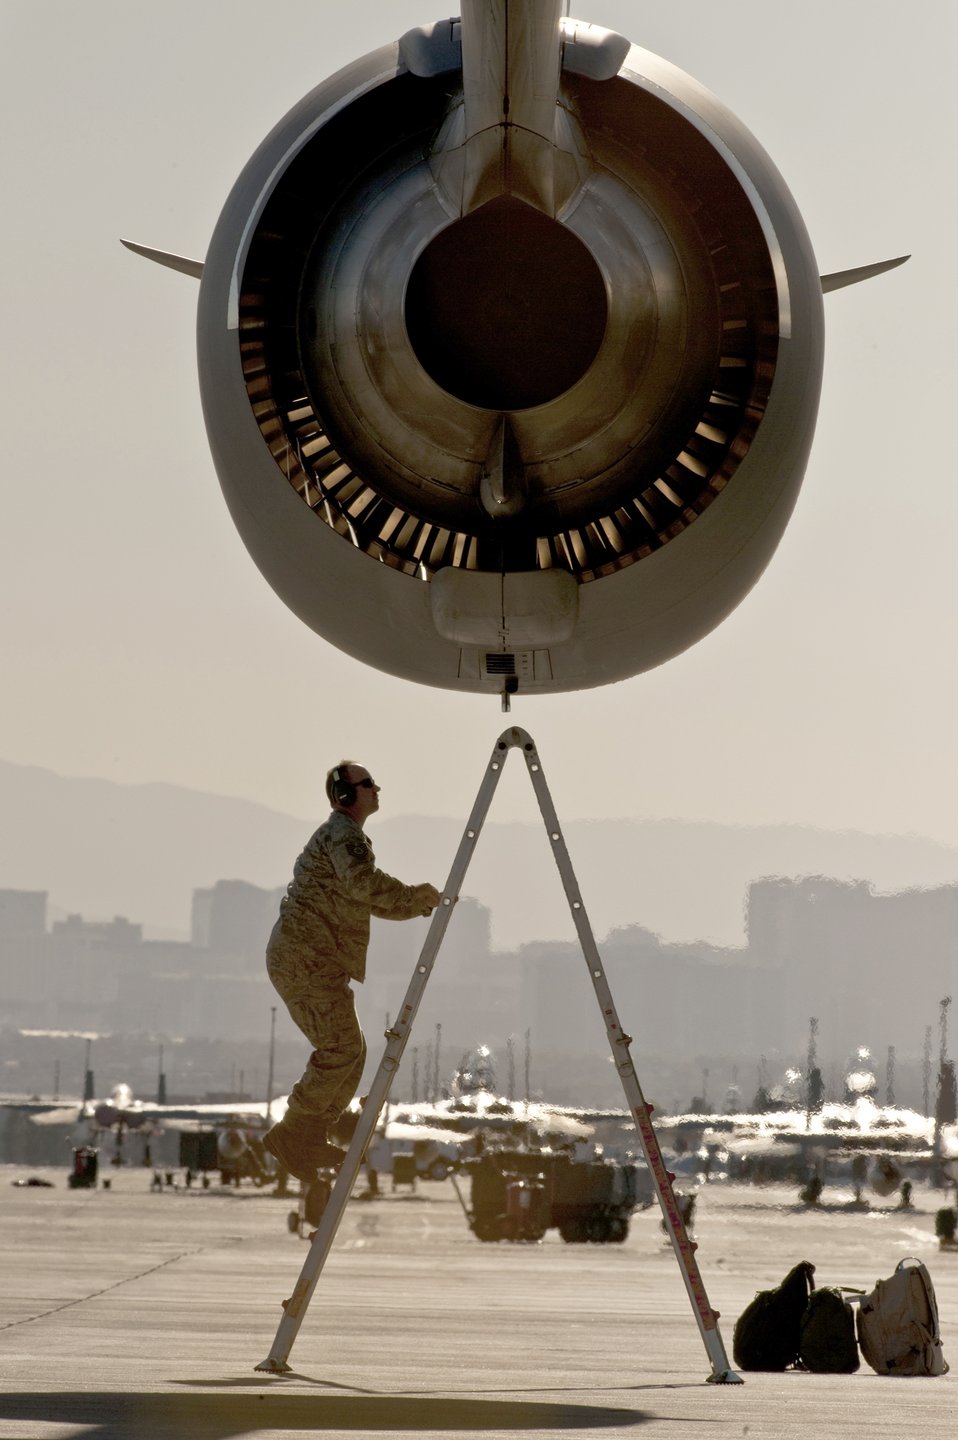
Keeping it in perspective

Tech. Sgt. Zachariah Pock climbs a ladder to conduct post-flight checks on a C-17 Globemaster III engine during the mobility air forces exercise Nov 17, 2010, at Nellis Air Force Base, Nev. Sergeant Pock is a crew chief with the 62nd Aircraft Maintenance Squadron at Joint Base Lewis-McChord, Wash.